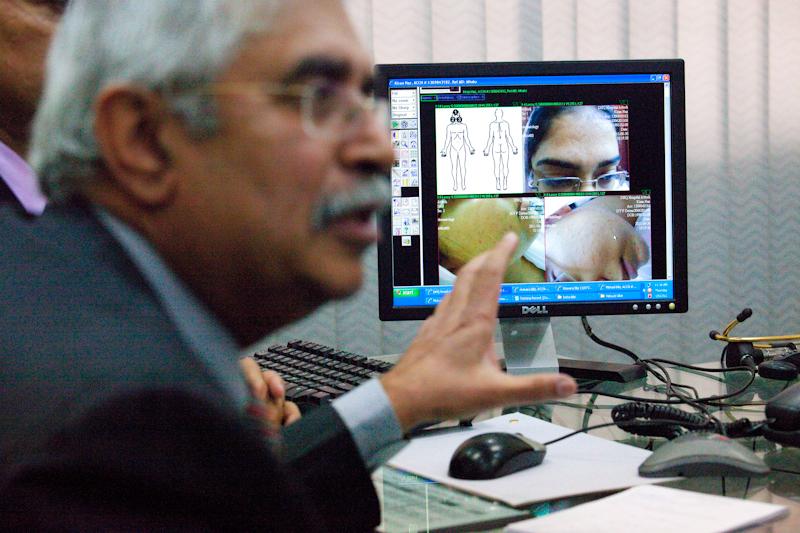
untitled